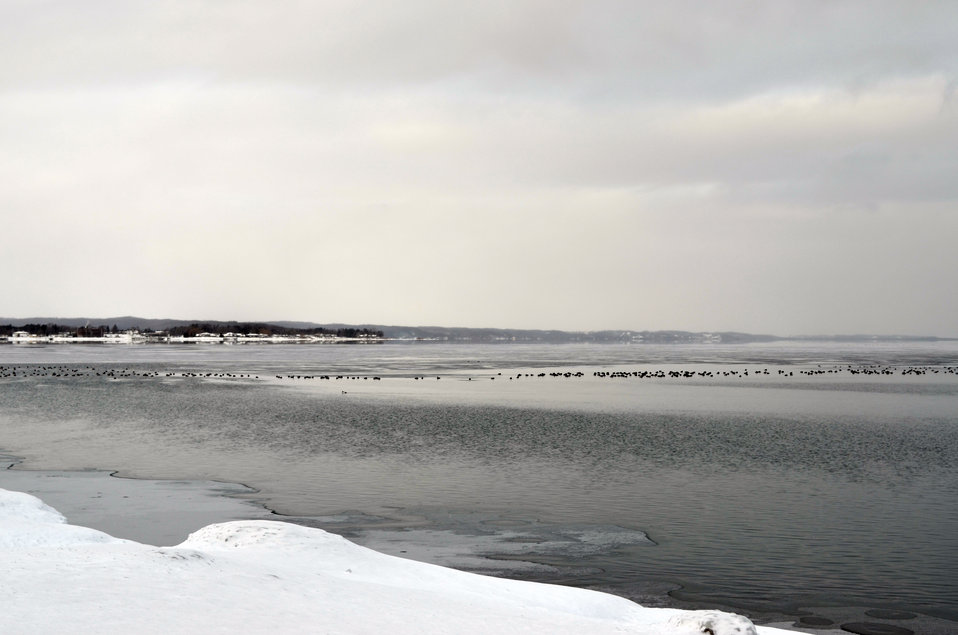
Ducks on Lake Michigan